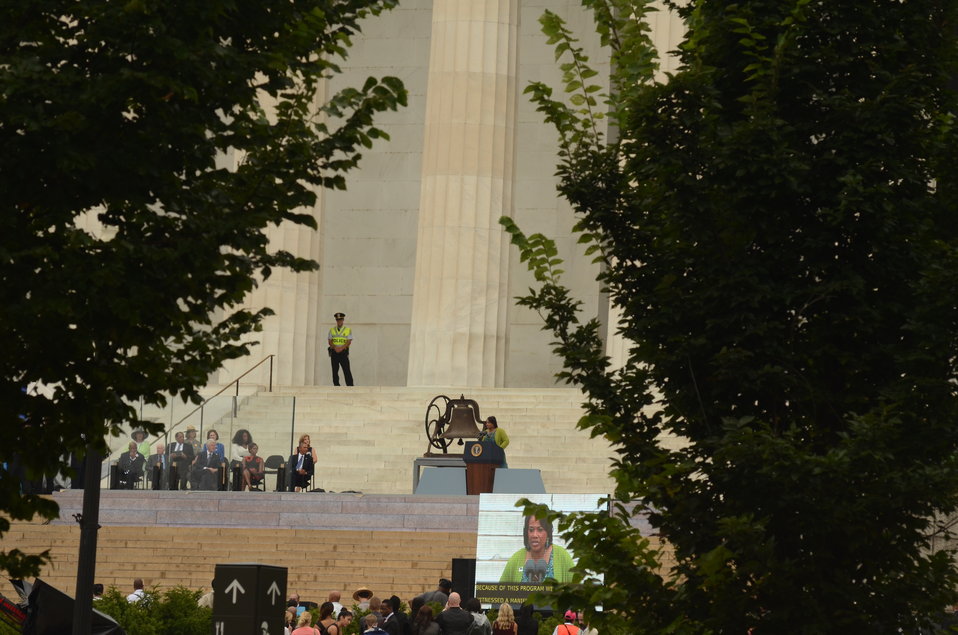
The Reverend Dr. Denise King speaks to marchers at the Lincoln Memorial for the March on Washington, D.C., on Wed., Aug. 28, 2013.